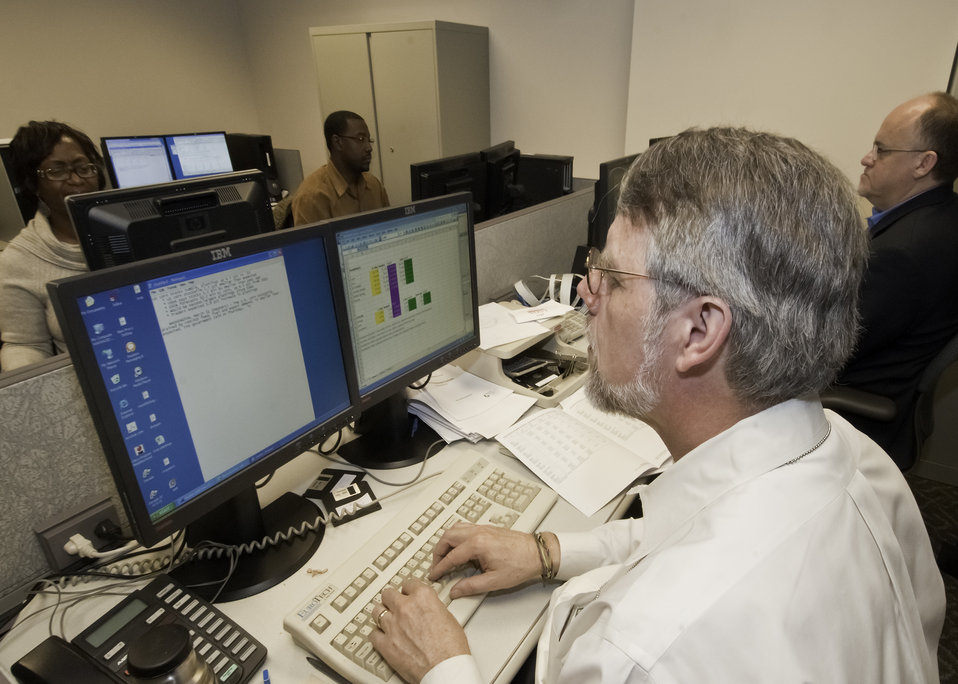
Chuck Abbott a Reuters News Service reporter reviews the United States Department of Agriculture, National Agricultural Statistics Service March Agricultural Survey before the information is released in Washington, DC, Thursday, March 31, 2011. The NASS lockup is agricultural commodity information held until the Secretary of Agricultural or Secretary’s Designee has signed and released the information. The signing is the official act of recognizing the information as an official USDA document.